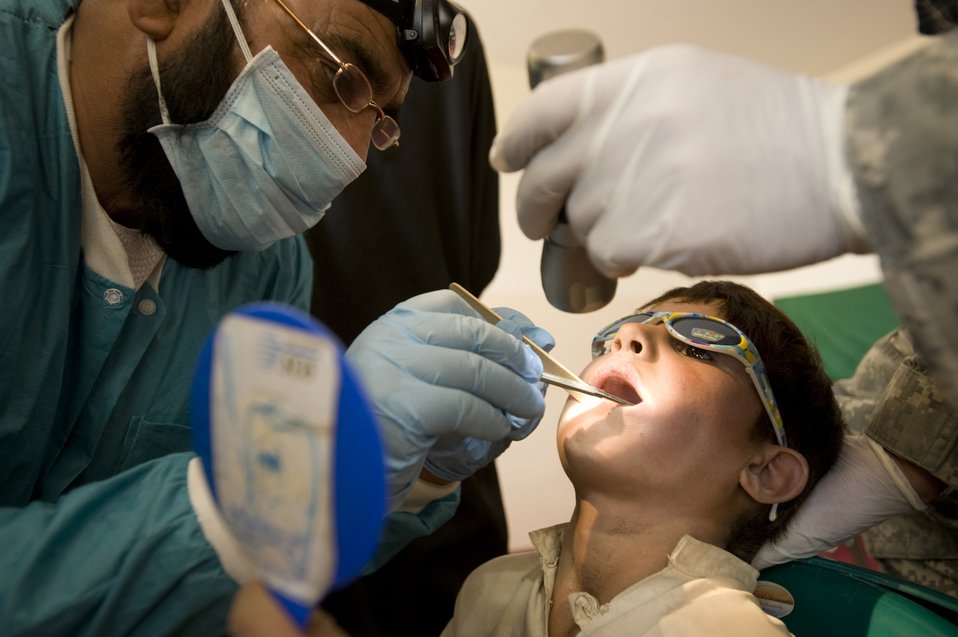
Servicemembers provide dental training for Afghans

Noorullah Agha, trained by members of the Zabul Provincial Reconstruction Team, examines an Afghan's teeth during a village dental outreach visit Oct. 11 in Zabul, Afghanistan. Although most Afghans lack basic dental hygiene products, their teeth remain relatively healthy due to limited sugar in their diets. When they do have problems many go untreated for years with the lack of basic dental care.